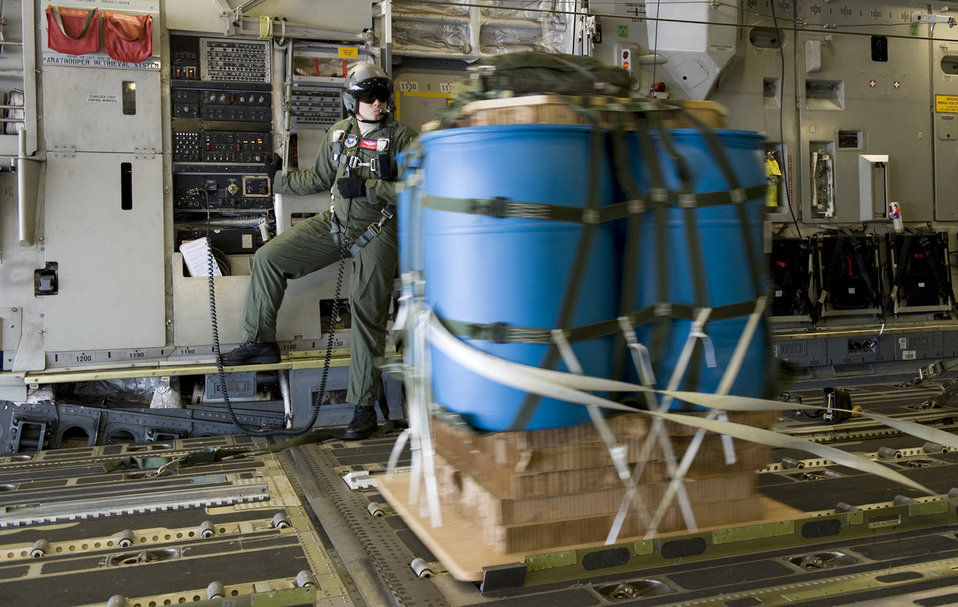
Airdrop training coming to Altus AFB

Staff Sgt. John Frisk watches a 1,000 pound cargo pallet leave the aircraft during a joint precision air drop system evaluation flight March 18, 2010, at Altus Air Force Base, Okla. Sergeant Frisk is a C-17 Globemaster III loadmaster with the 58th Airlift Squadron.